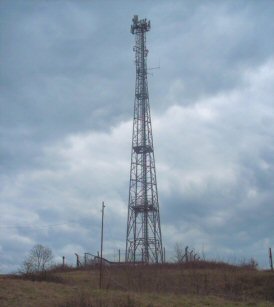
Radio Antenna at Kelvedon Hatch ( M Kenyon )